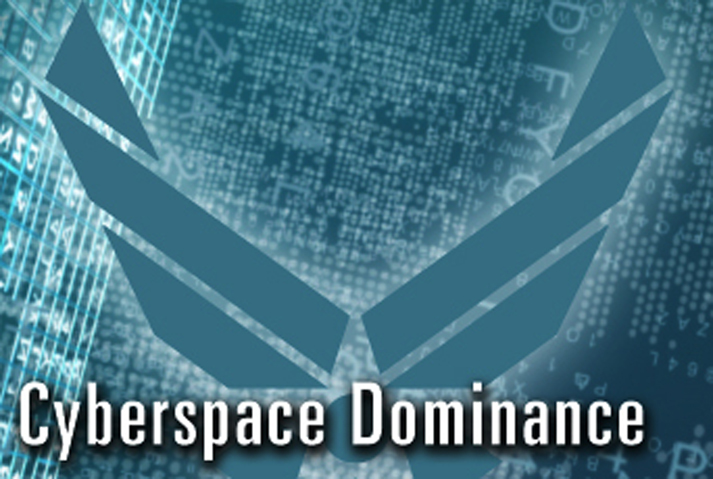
Cyberspace Dominance